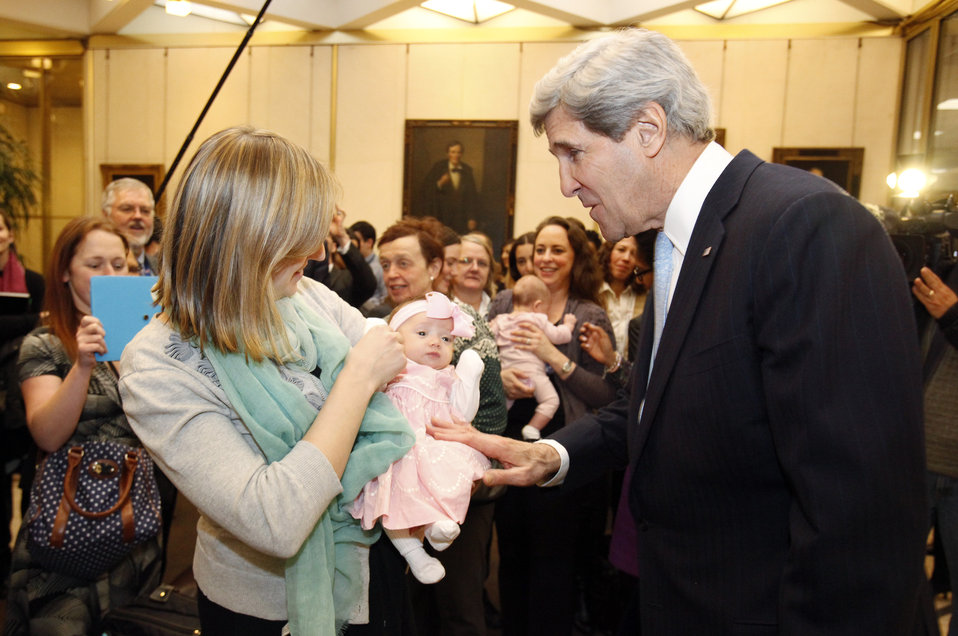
Secretary Kerry at the Embassy London Meet and Greet

U.S. Secretary of State John Kerry enjoys time with Embassy London staff and and their families at the Secretary's Meet and Greet in London, United Kingdom, February 25, 2013.